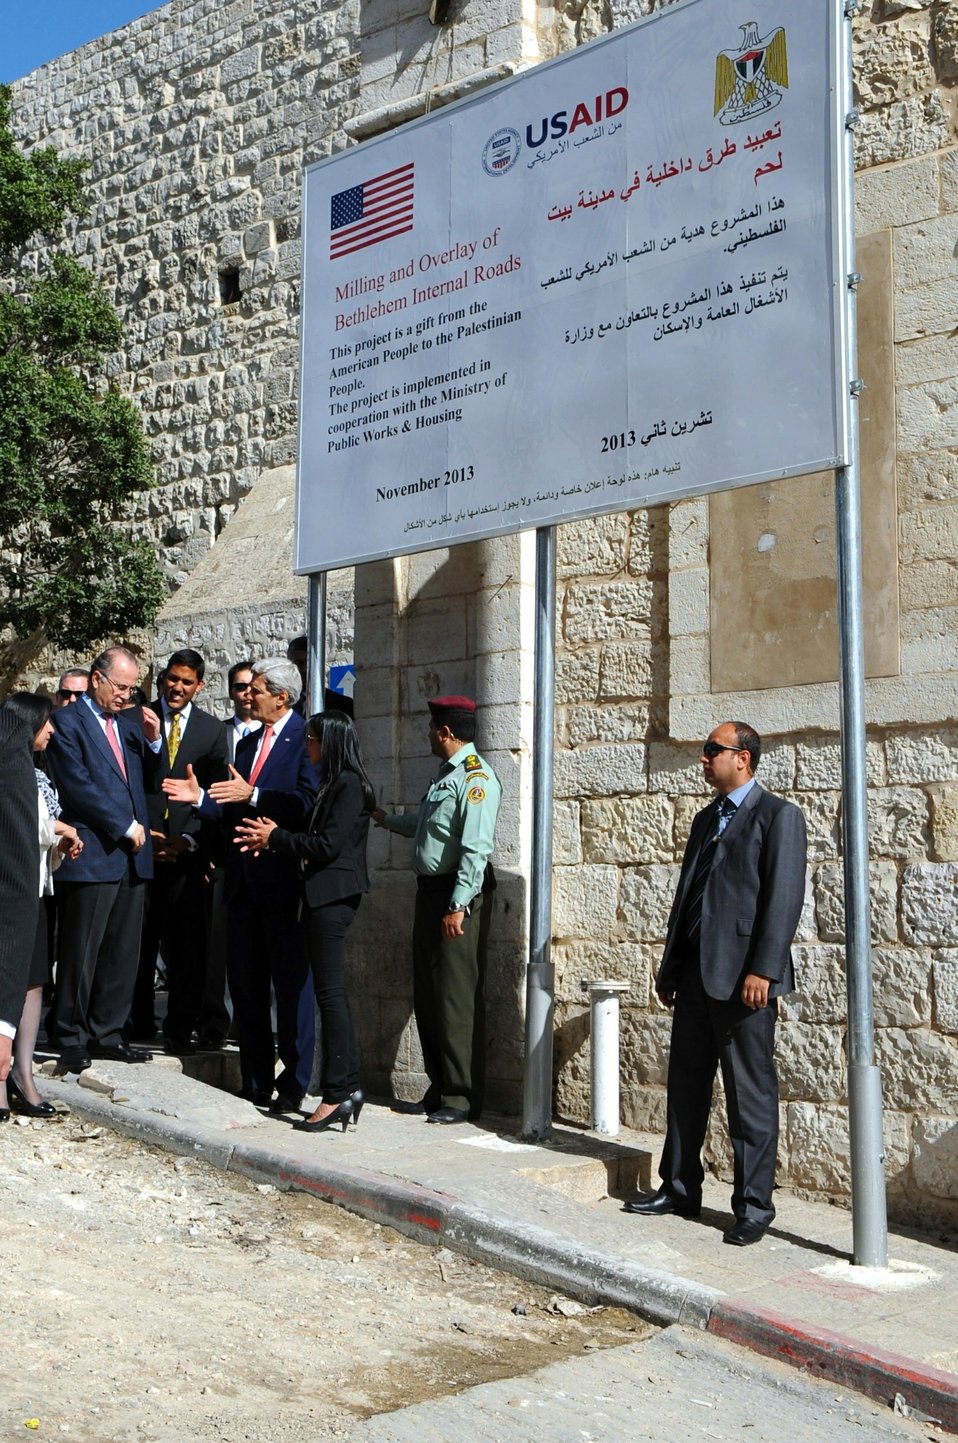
Secretary Kerry Views a USAID-sponsored Road Repair Project in the West Bank

U.S. Secretary of State John Kerry, joined by USAID Administrator Rajiv Shah, Mayor Vera Baboun, and other local officials, listens to a description of a USAID-sponsored road-repair project just off Manger Square in Bethlehem during a visit to the West Bank on November 6, 2013.